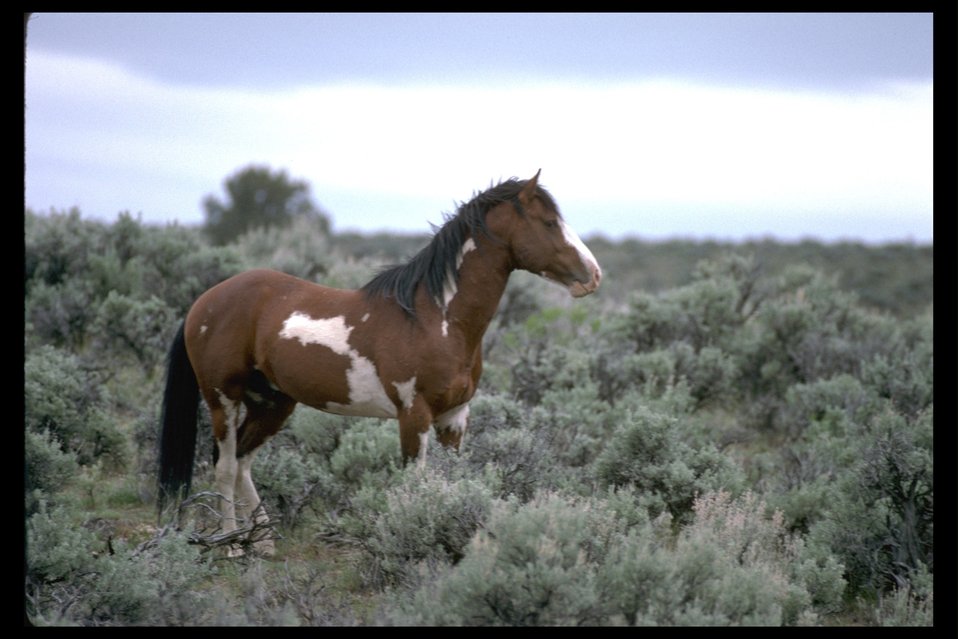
Pinto Stallion in South Steens HMA.